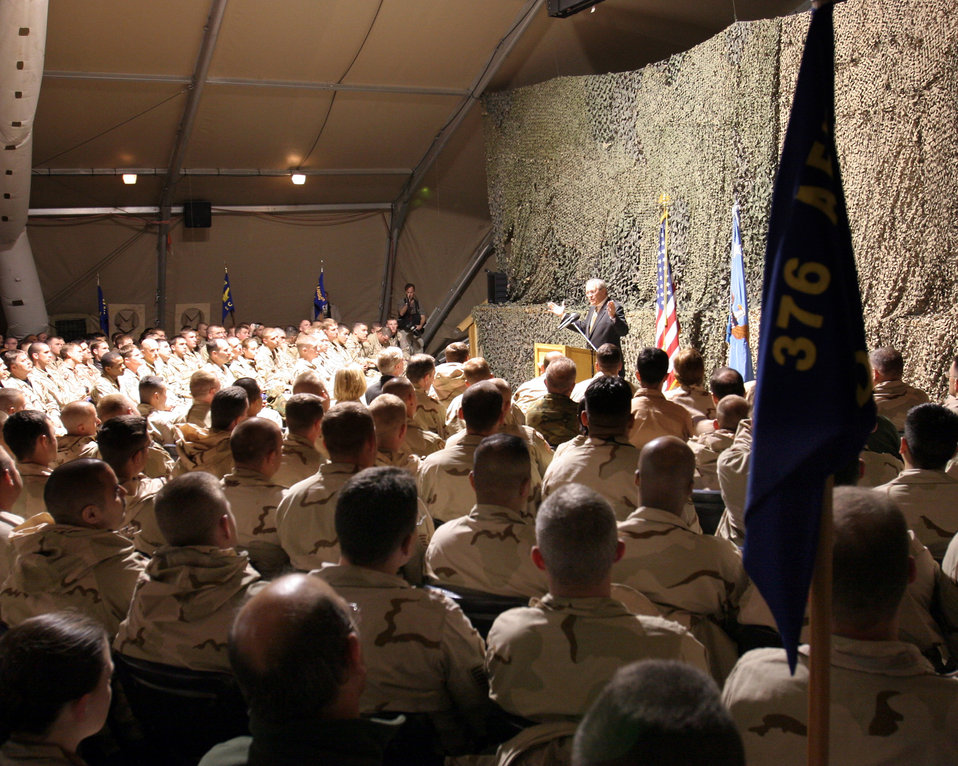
Rumsfeld visits Airmen at Manas

MANAS AIR BASE, Kyrgyzstan -- Defense Secretary Donald Rumsfeld answers questions during a town hall meeting with Airmen here April 14. He visited the base as a part of his tour through U.S. Central Command's area of operations.